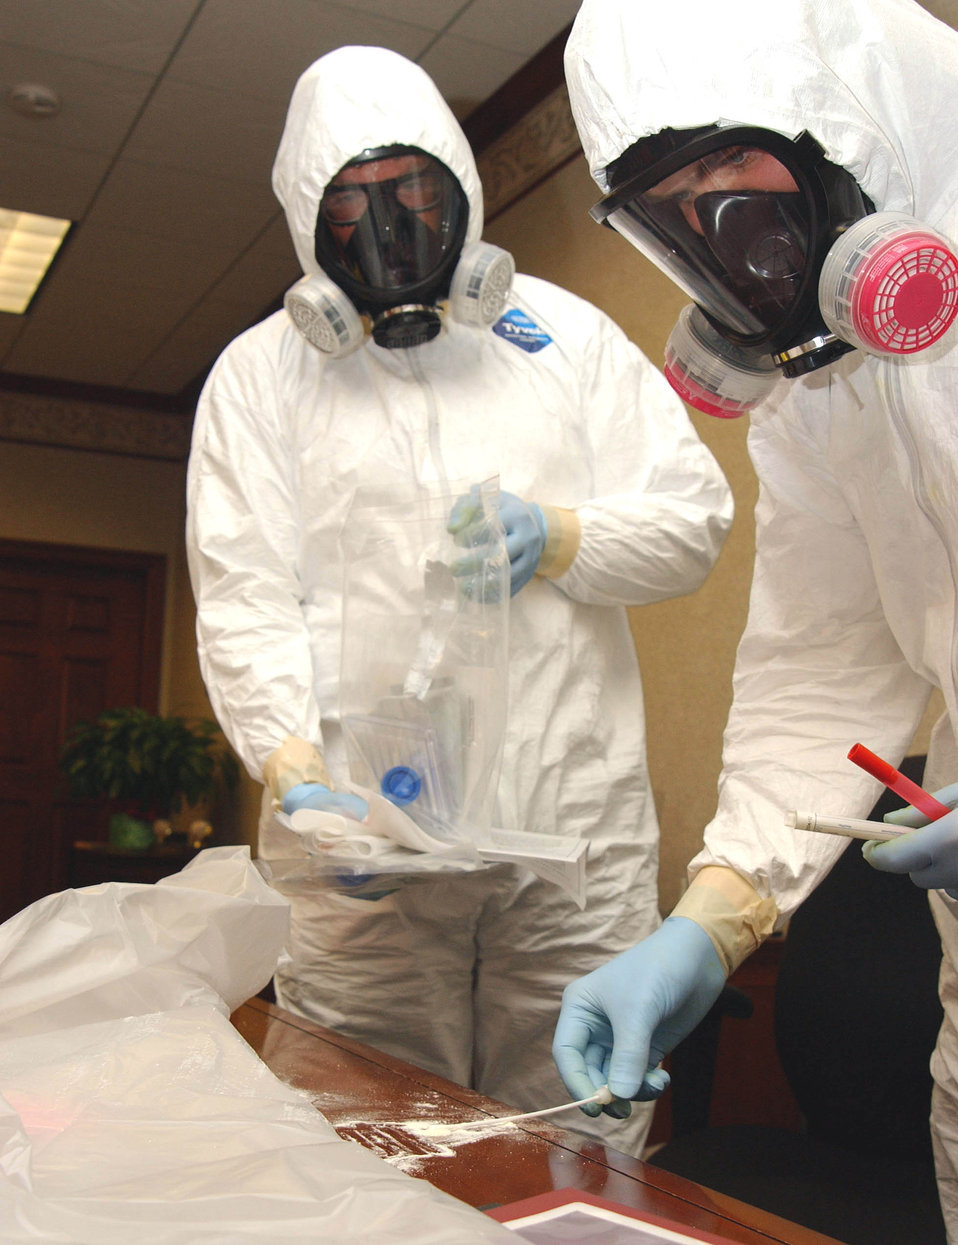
This is only a test

MACDILL AIR FORCE BASE, Fla. -- Airman 1st Class Jason Baker takes a sample of white powder during an exercise here March 11. The exercise was held to prepare the base for any possible contingency during an upcoming air show. Airman Baker is assigned to the 6th Aeromedical Squadron.